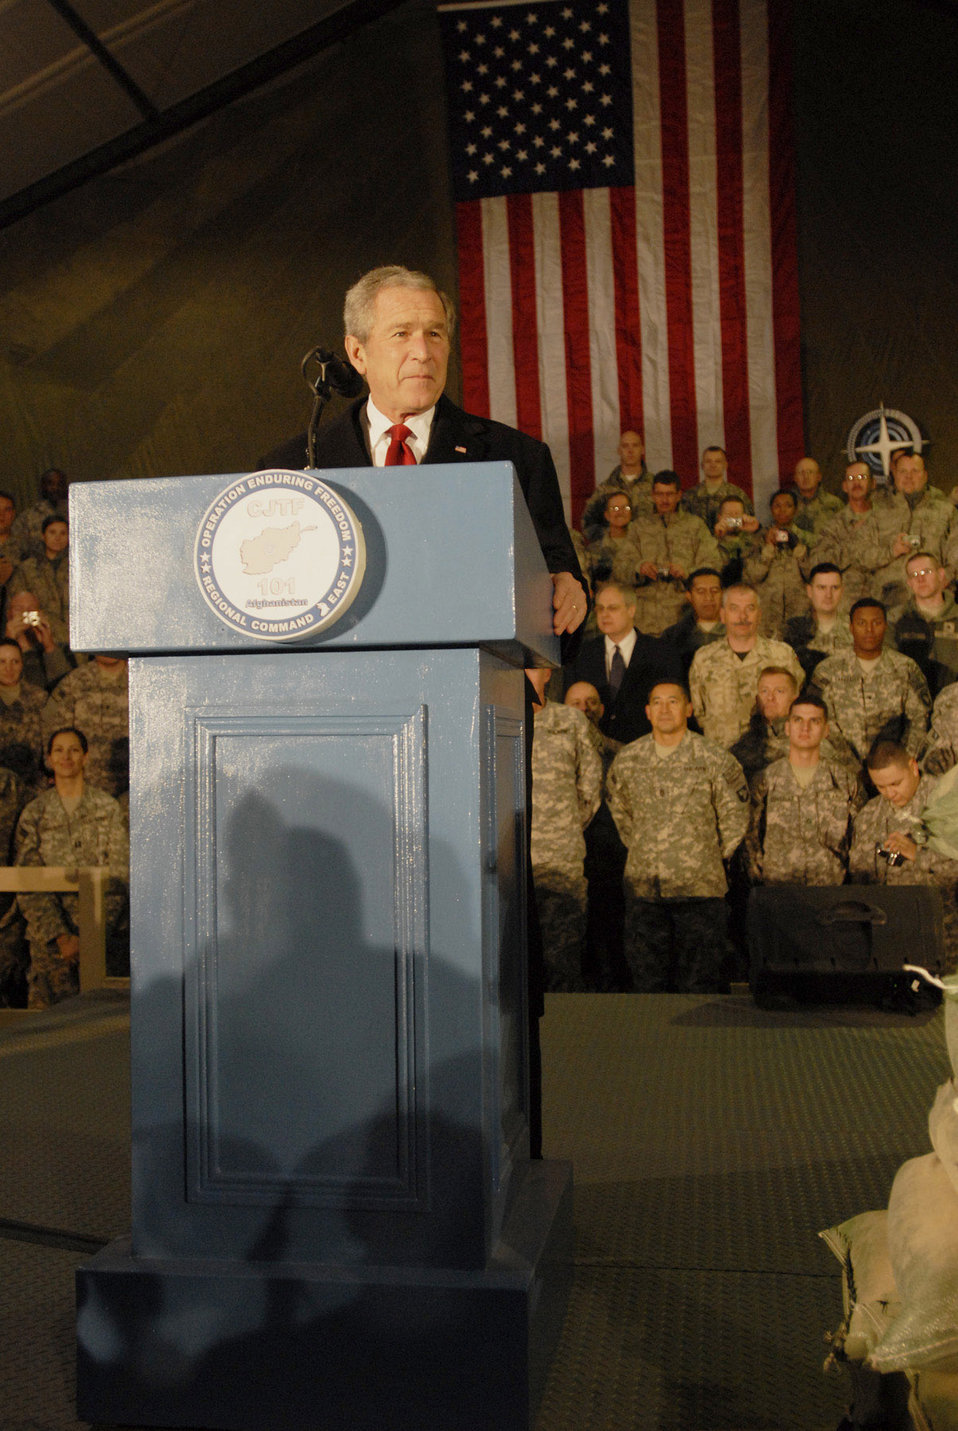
President Bush visits troops in Bagram

President George W. Bush speaks to Combined Joint Task Force-101 servicemembers Dec. 15 at Bagram Airfield, Afghanistan.